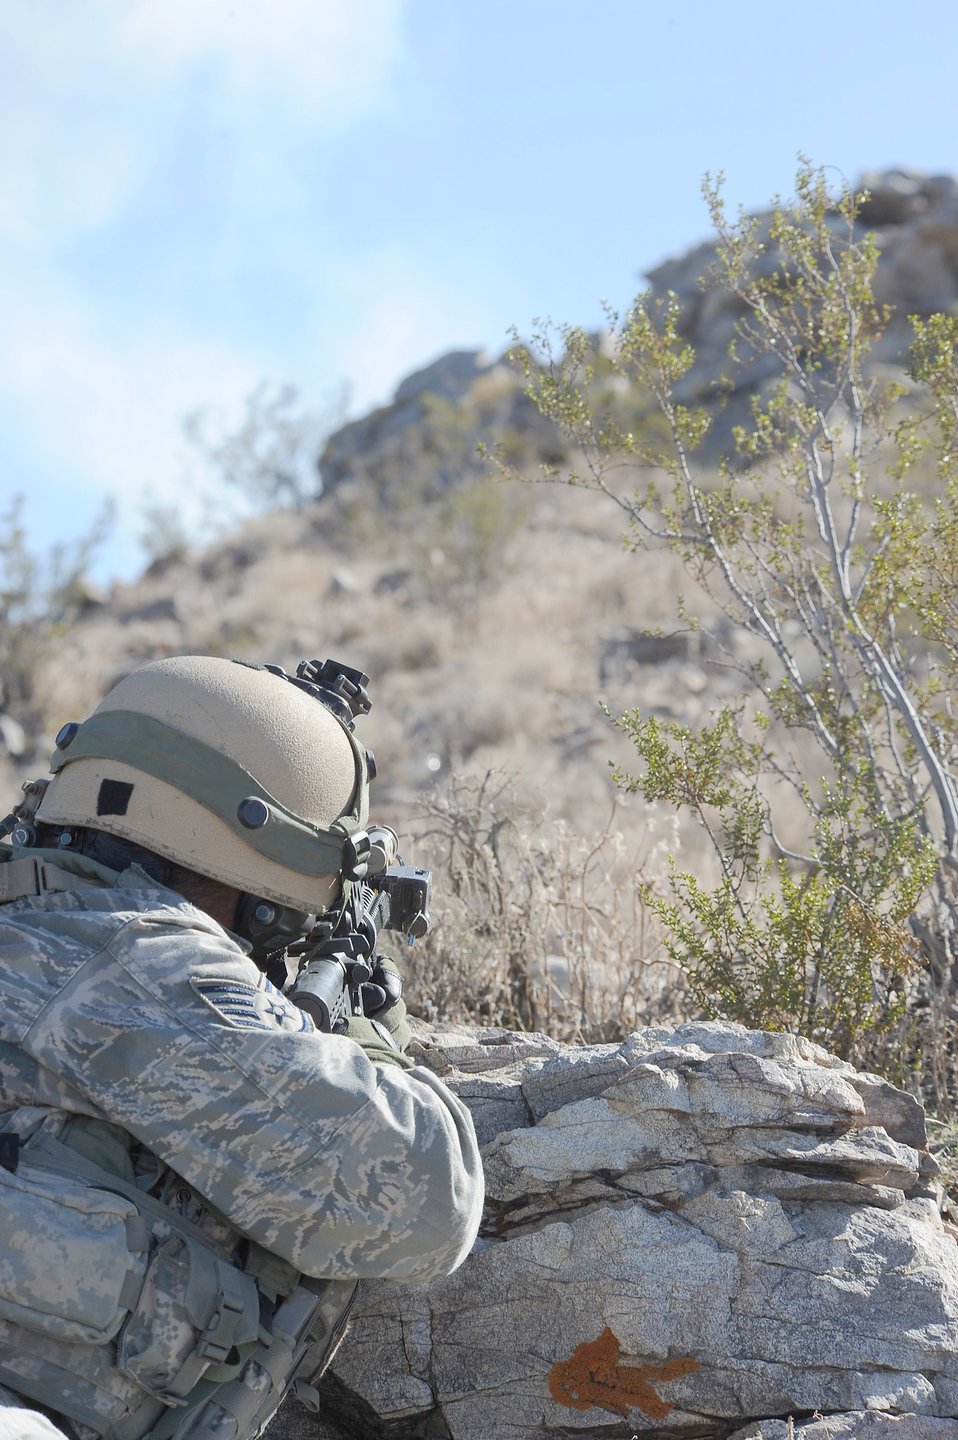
Combat training scenario

Staff Sgt. Nathaniel Vanecko takes cover while under indirect fire during a training scenario Nov. 1, 2010, at the training range on Fort Irwin, Calif. Sergeant Vanecko is with the 12th Combat Training Squadron Tactical Air Control Party.